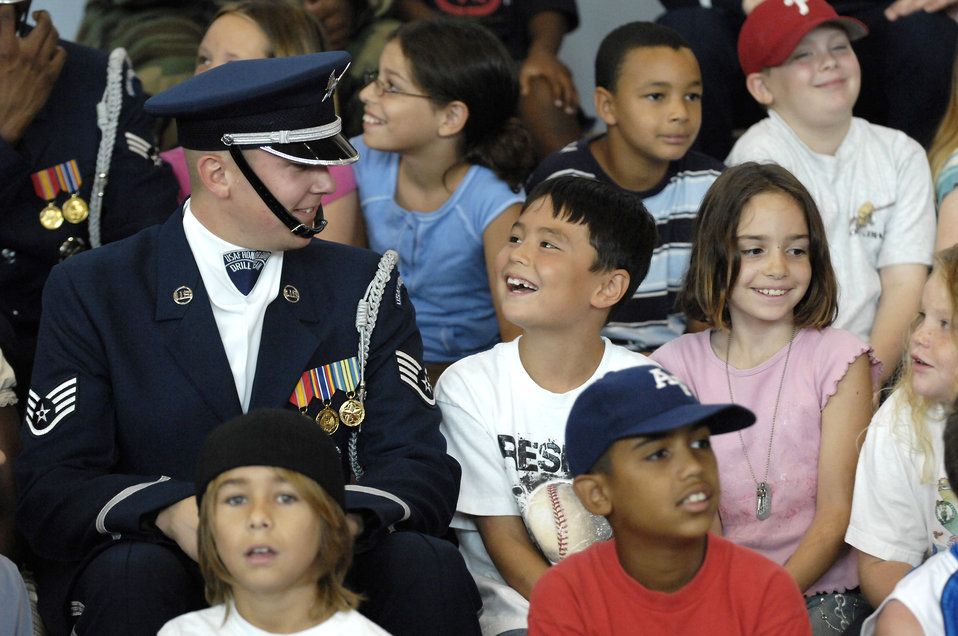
European tour

Staff Sgt. David talks with a young boy from the child development center after the U.S. Air Force Honor Guard Drill Team performed at Aviano Air Base, Italy, July 30. During their European tour, the Drill Team visited five major Air Force installations and events in three countries. Sergeant Leininger is the NCO in charge of recruiting for the Air Force Honor Guard.